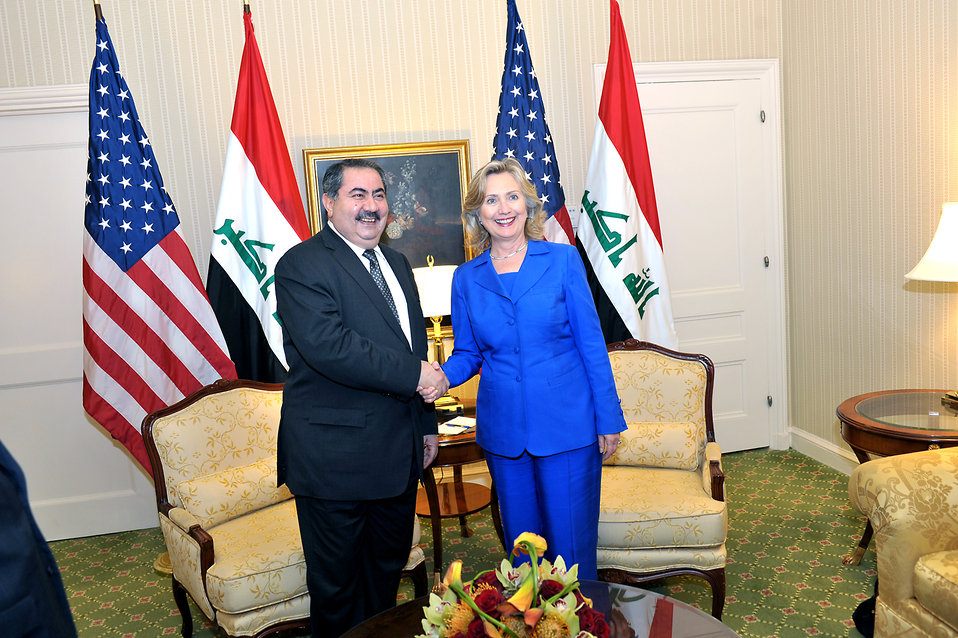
Secretary Clinton Shakes Hands With Iraqi Foreign Minister Zebari

U.S. Secretary of State Hillary Rodham Clinton shakes hands with Iraqi Foreign Minister Hoshyar Zebaria after their bilateral meeting at the Waldorf-Astoria in New York, New York, on September 23, 2010.